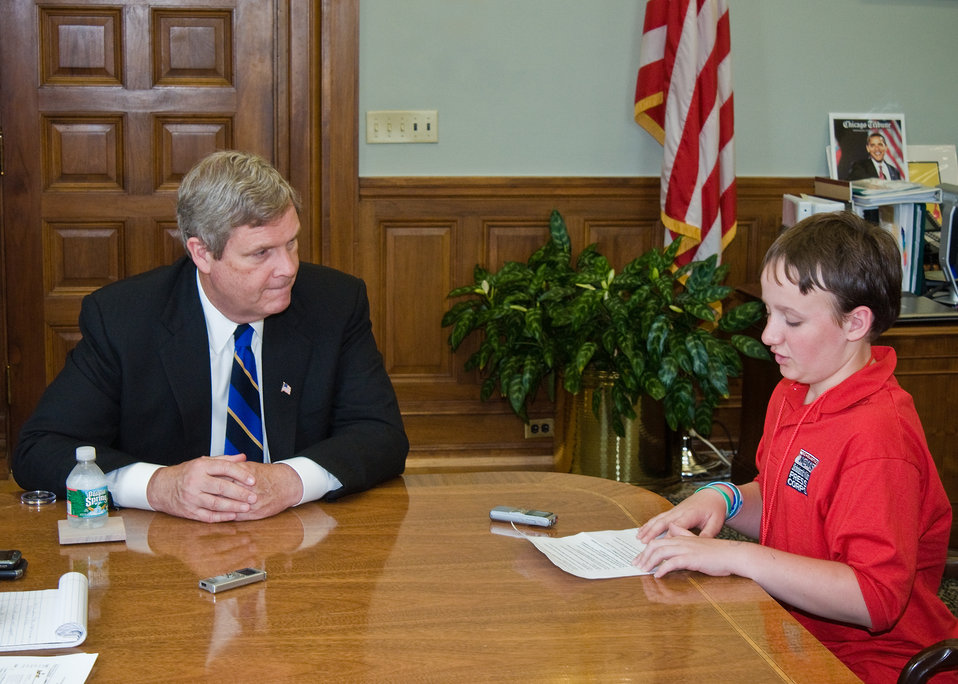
Agriculture Secretary Tom Vilsack (left) granted Jonas Hosmer (right) a reporter with the Scholastic Kids Press Corps an interview on Wednesday, May 19, 2010 The interview took place in Secretary Vilsack's office in Washington, D. C. The Scholastic Kids Press Corps is a team of young reporters ages 9 – 14 located around the nation. The reporters write for Scholastic News and Junior Scholastic magazines, as well as several online sites. Scholastic News and Junior Scholastic are weekly magazines distributed in U.S. classrooms by teacher subscribers in grades 1 – 12. The magazines have a combined circulation of approximately 8 million with a reach of three times as many students, parents and teachers. The web site averages around 3.2 million visitors a month. USDA Photo 10di1362-20.